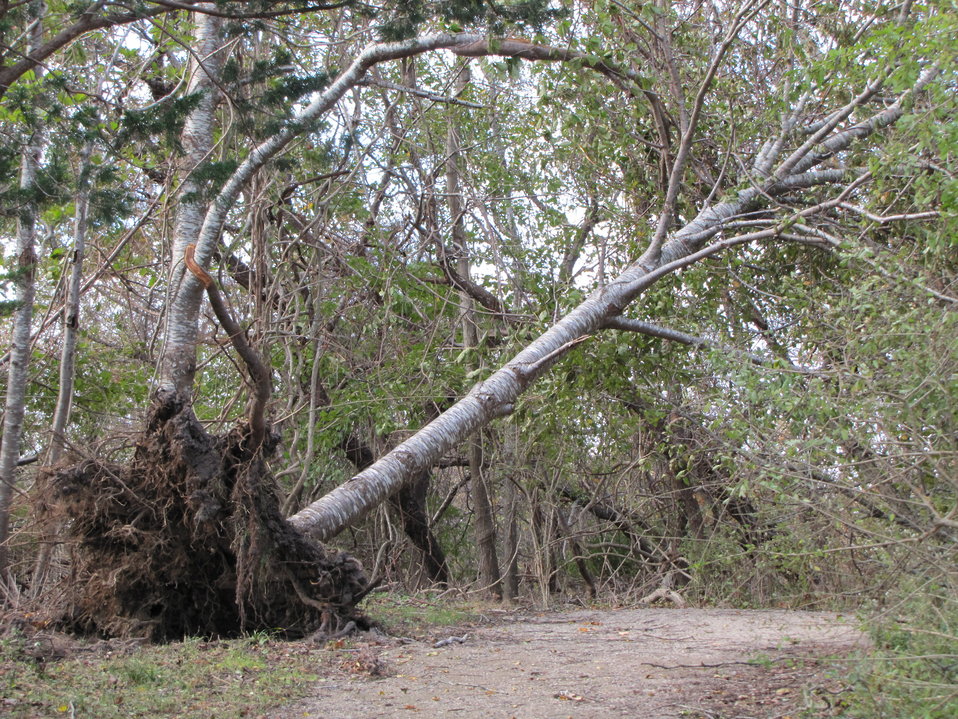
Uprooted tree at Elizabeth A. Morton National Wildlife Refuge (NY)

Uprooted tree over the trail at Elizabeth A. Morton National Wildlife Refuge, part of the Long Island National Wildlife Refuge Complex.